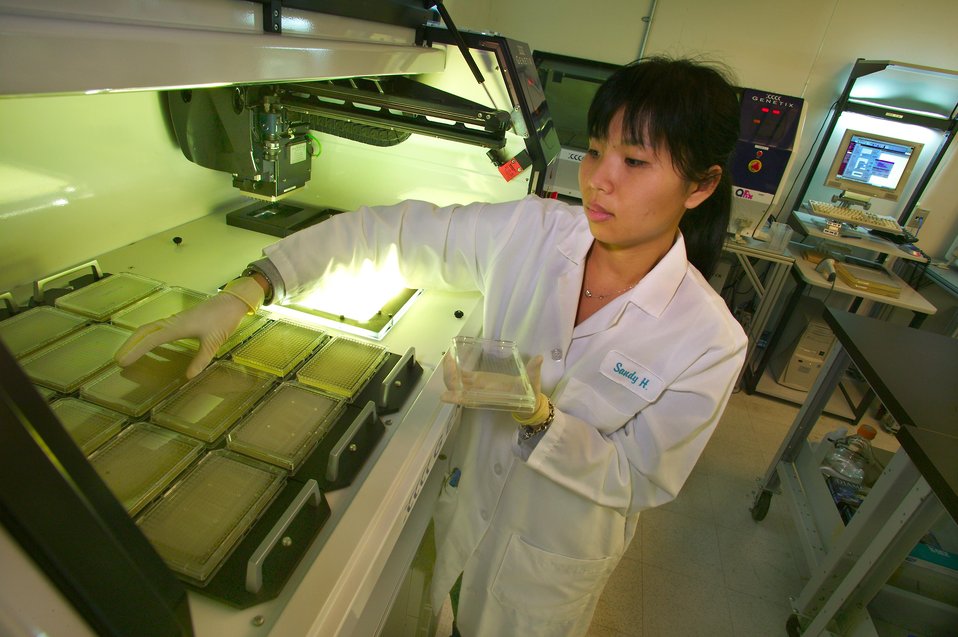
THE COLONY PICKER LAB AT THE JOINT GENOME INSTITUTE.

THE MISSION OF THE DEPARTMENT OF ENERGY'S JOINT GENOME INSTITUTE IS TO DEVELOP AND EXPLOIT NEW SEQUENCING AND OTHER HIGH THROUGHPUT GENOME SCALE AND COMPUTATIONAL TECHNOLOGIES AS A MEANS FOR DISCOVERING AND CHARACTERIZING TH BASIC PRINCIPLES AND RELATIONSHIPS UNDERLYING THE ORGANIZATION, FUNCTION, AND EVOLUTION OF LIVING SYSTEMS.